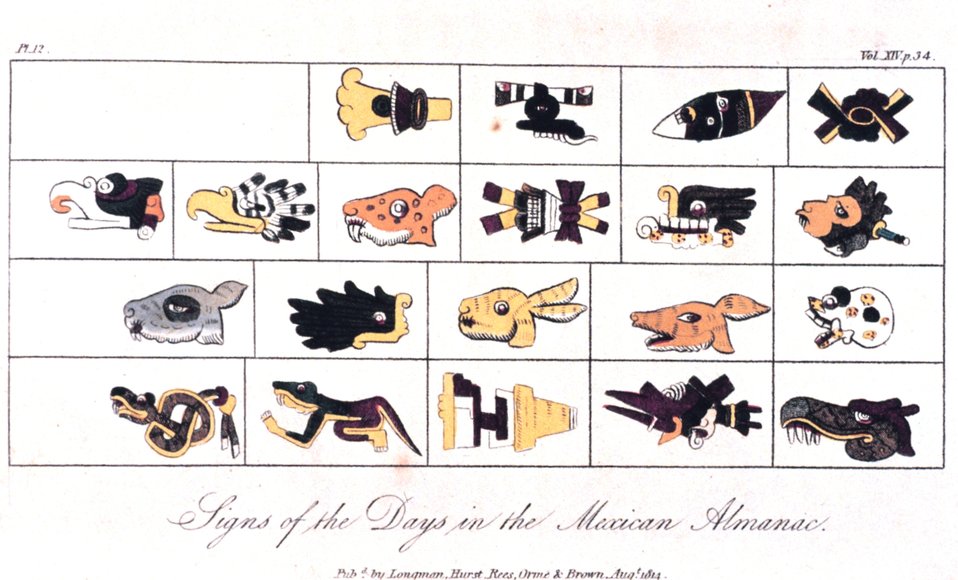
'Signs of the Days in the Mexican Almanac' in: 'Researches Concerning the Institutions and Monuments of the Ancient Inhabitants of America,' by Alexander von Humboldt and translated by Helen Maria Williams, 1814. Vol. II, p. 34. Library Call Number C/gLH919.